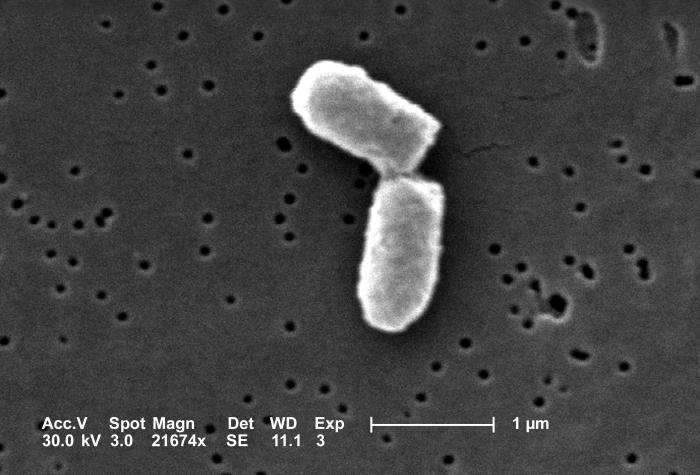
This scanning electron micrograph (SEM) depicts a highly magnified view of a dividing Escherichia coli bacteria, clearly displaying the point at which the bacteria's cell wall was dividing; Magnification 21674x.